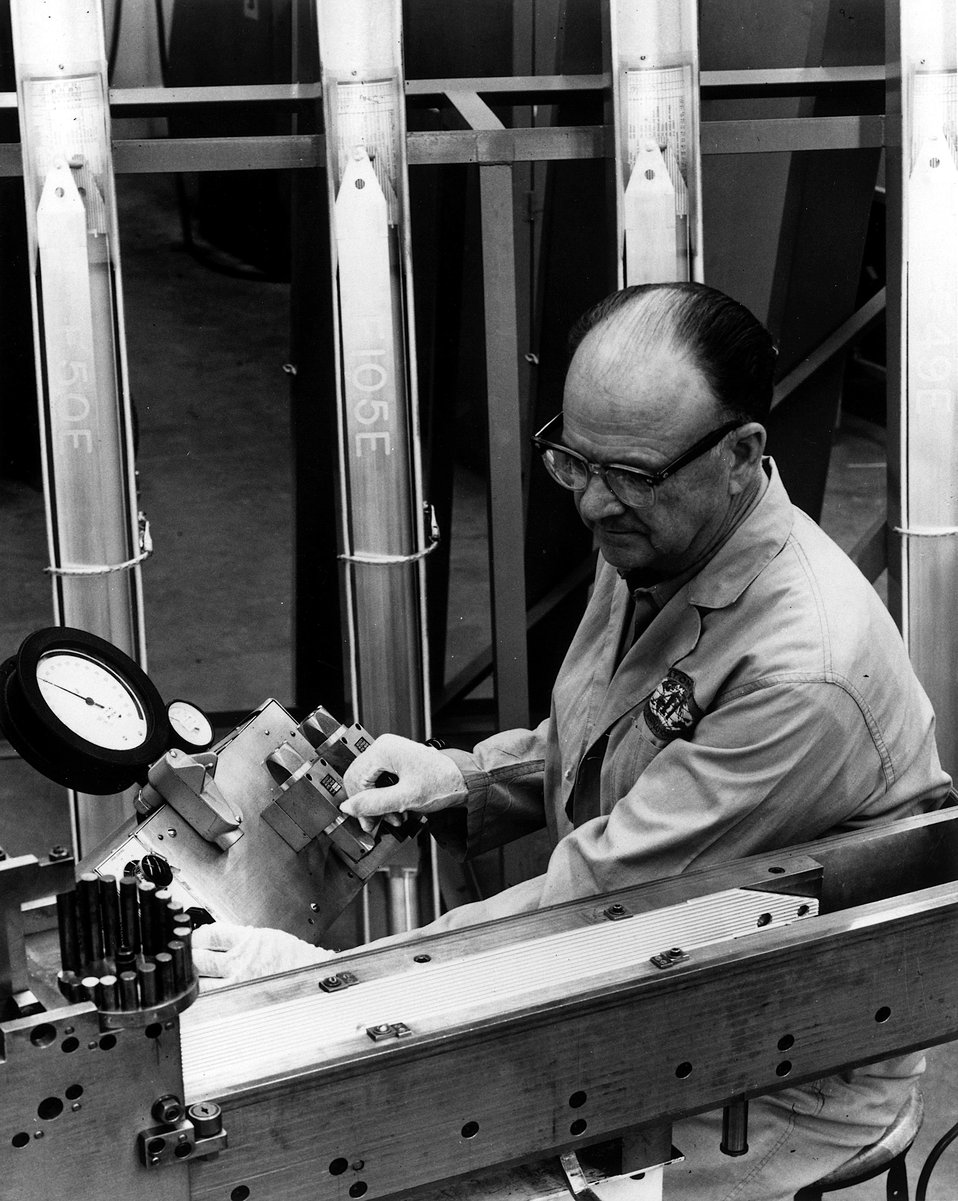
Final assembly is completed on one of 45 atomic reactor fuel elements shipped by Atomics International for use in the Atomic Energy Commission's Engineering Test Reactor at the National Reactor Testing Station in Idaho. Circa 1967.